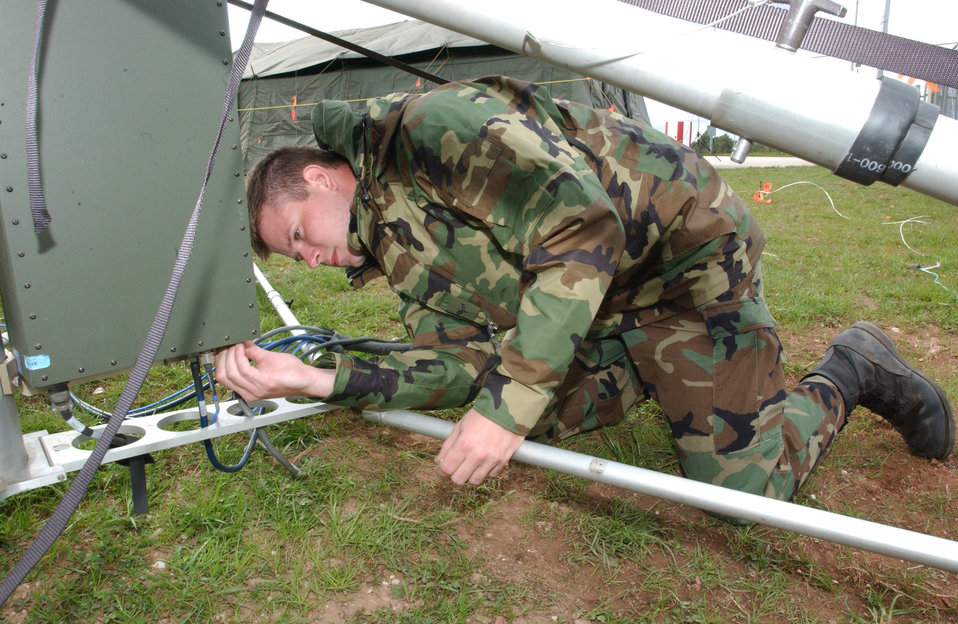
Satellite setup

SPANGDAHLEM AIR BASE, Germany -- Airman 1st Class Jeffrey Layson checks connections on a satellite during a Harley Saber exercise here April 19. Airman Layson is a satellite communications systems apprentice with the 52nd Communications Squadron.